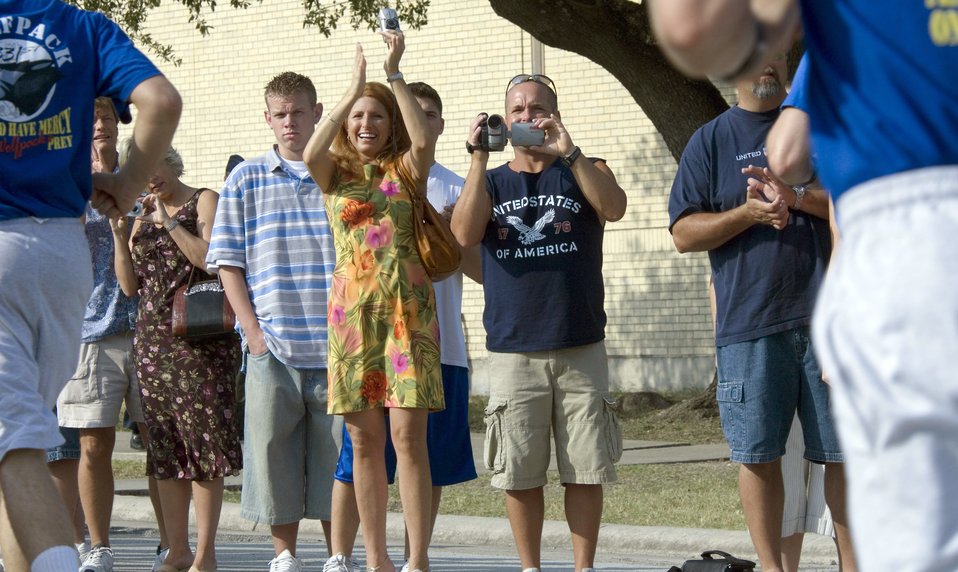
Airmen's Run

Friends and family members of those completing Air Force Basic Military Training cheer as Airmen pass during the 2.5-mile Airmen's run Thursday, June 29. The run is a victory celebration of the challenges overcome and esprit de corps gained by Airmen during training.